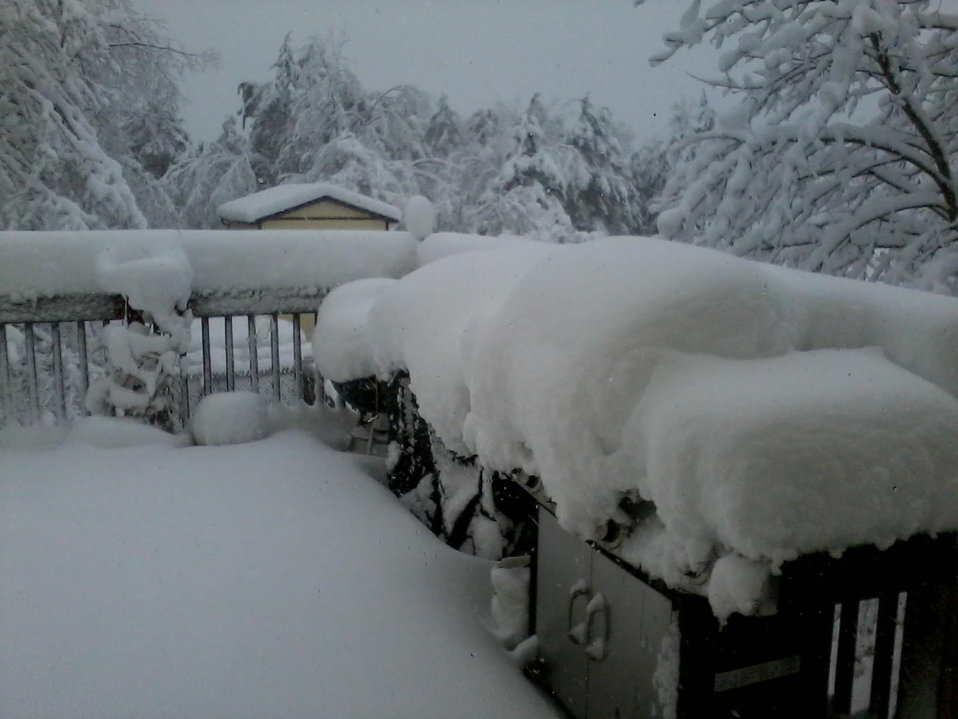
Hurricane Sandy pounds West Virginia

John Schmidt, of the West Virginia Field Office, photographed his backyard during Hurricane Sandy.